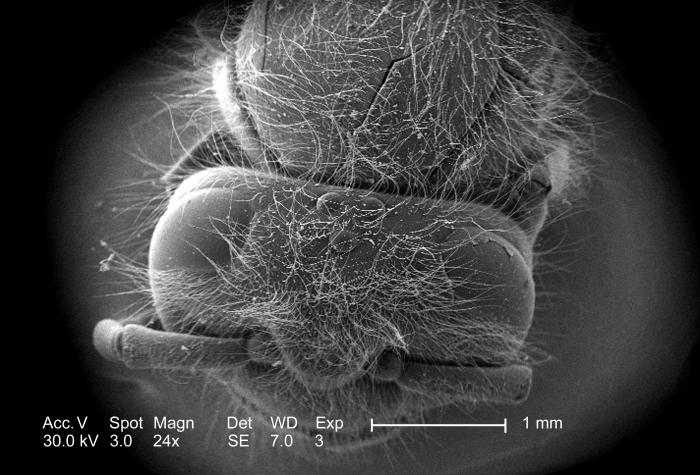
From a relatively low-magnified perspective, this scanning electron micrograph (SEM) depicted a superior view of the head capsule, and the cephalothoracic junction, or the junction of the Western honeybee's, Apis mellifera, head and thorax. Revealed are the bee's two laterally situated large compound eyes, the three triangularly arranged, medially located, ocelli, or simple eyes, the two laterally situated antennae, and an exoskeletal surface that is covered by setae, or 'hairs' of various lengths; Magnified 24x.